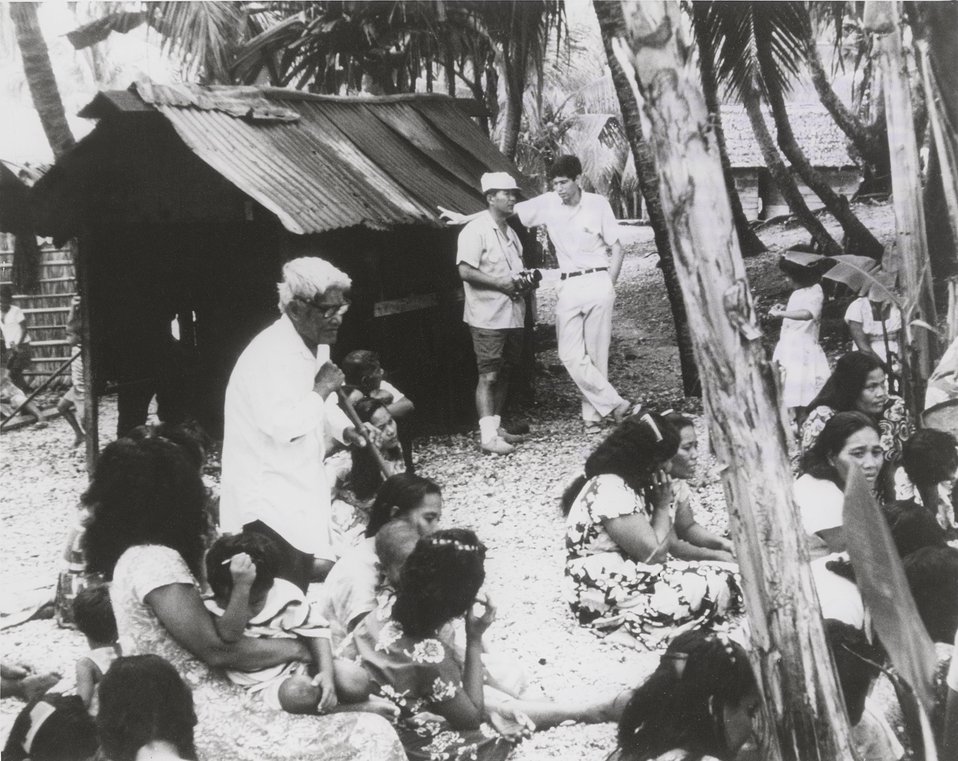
Bikini Atoll, ten years after nuclear testing inhabitants assured safe return.